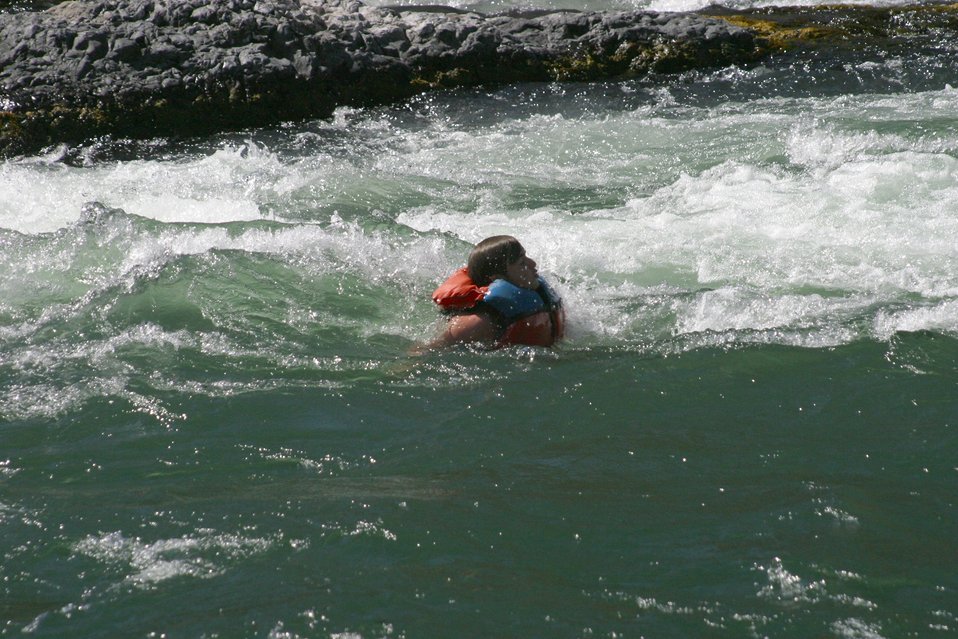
Looking up stream from the Sandy Beach take out.